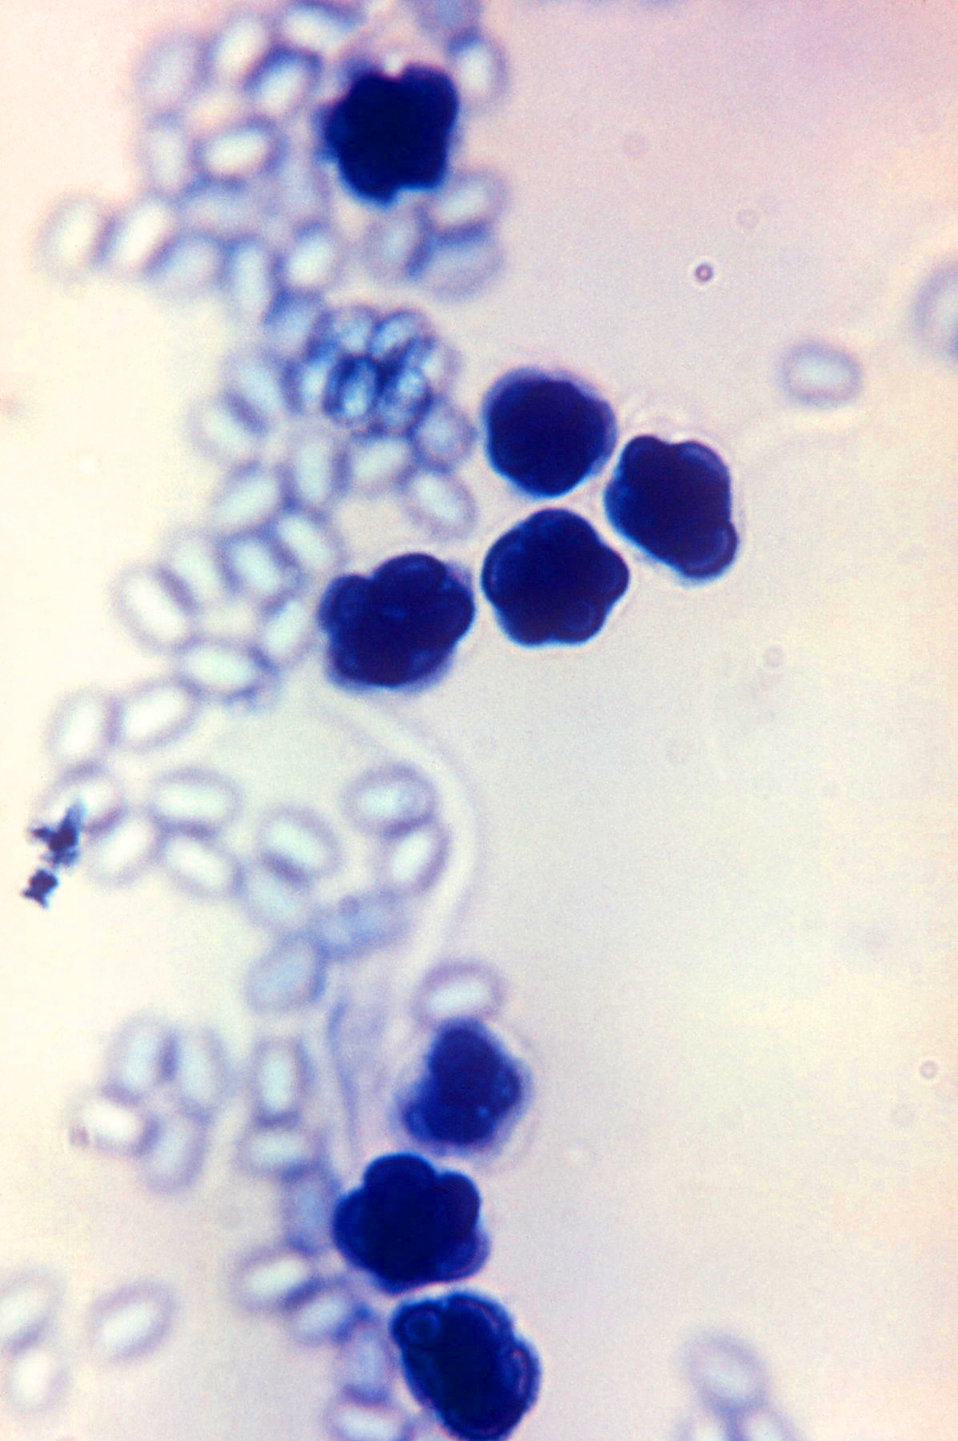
Magnified 1200x, this photomicrograph depicted a number of 'asci' and 'ascospores' of the fungal organism, Talaromyces flavus var. flavus. The ascospores are the very small egg-shaped structures, which are the sexual spores that had formed inside the specialed spore-containing sac known as the ascus. The asci, i.e., plural of ascus, are the dark-blue structures that contain yet to be released spores.